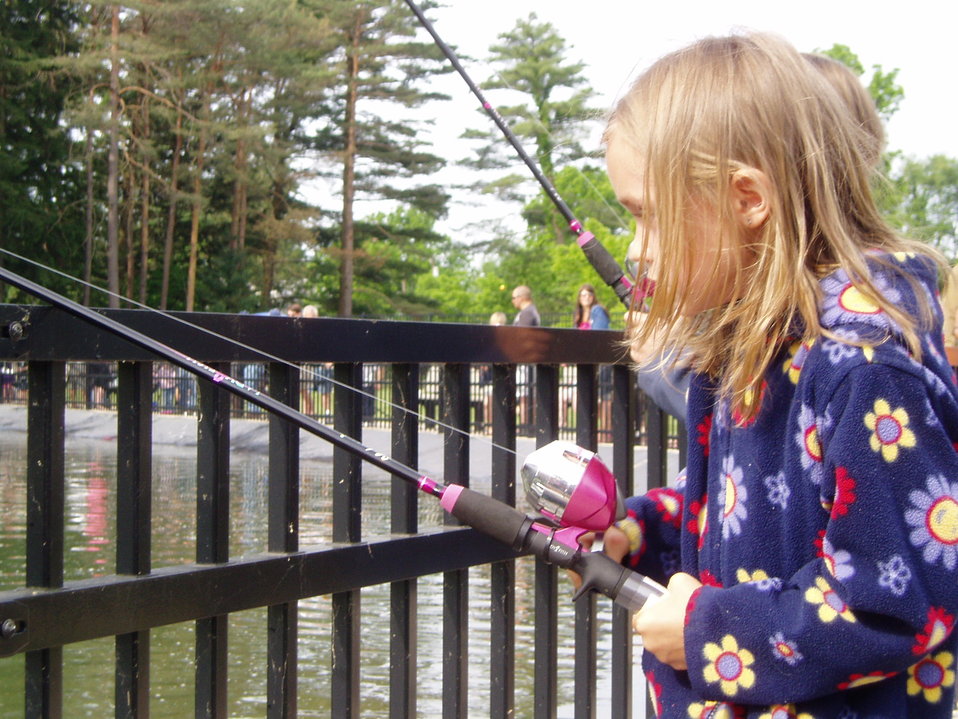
Northeast Fishery Center Annual Fishing Event

Young girl fishing at the Northeast Fishery Center's annual fishing event in Lamar, PA.